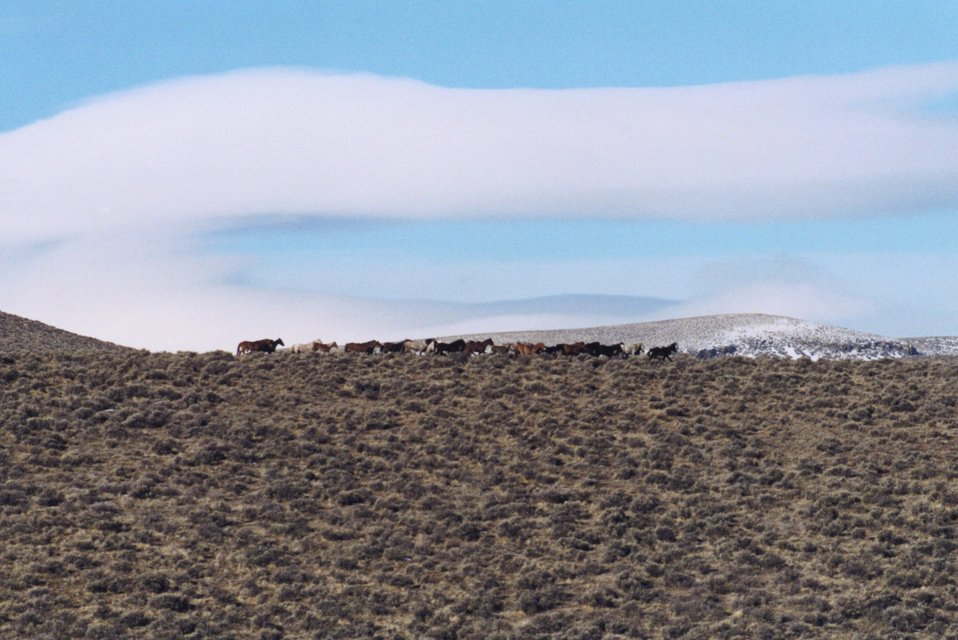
Heath Creek Wild Horse Management Heard Area.